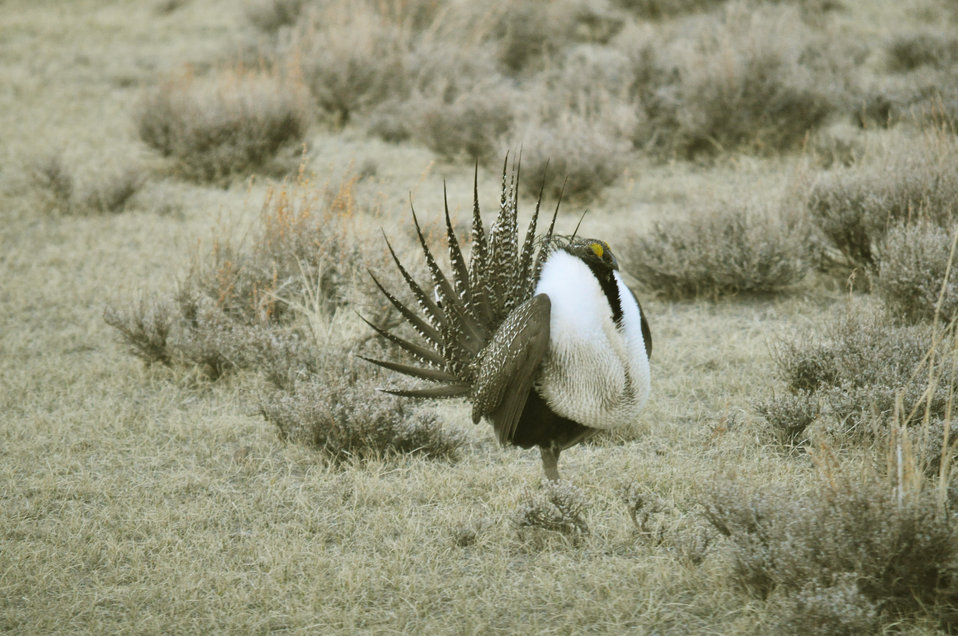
Male greater sage-grouse struts at lek (dancing or mating grounds) to attract females near Bodie, California.